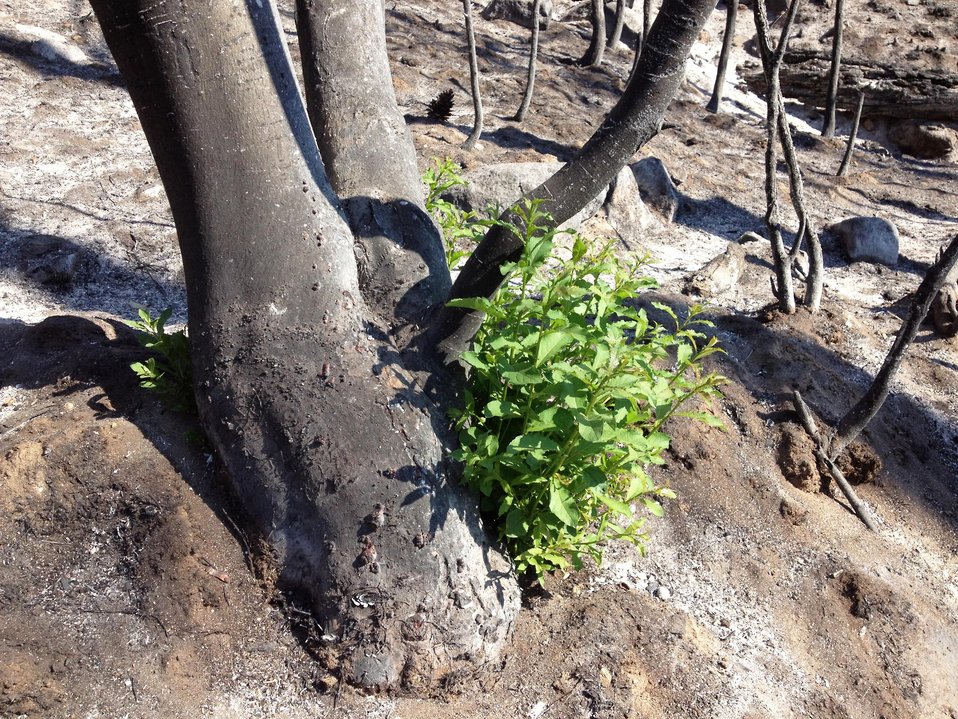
Three weeks after the Rim Fire, new vegetation starts growing. Burned Area Emergency Response (BAER) is a rapid assessment of burned watersheds by a BAER team to identify imminent post-wildfire threats to human life and safety property and critical natural or cultural resources on National Forest System lands and take immediate actions to implement emergency stabilization measures before the first major storms. Fires result in loss of vegetation exposure of soil to erosion and increased water runoff that may lead to flooding increased sediment debris flows and damage to critical natural and cultural resources. BAER team members implement seeding and mulching installation to prevent erosion, erect temporary water run-off control structures that will protect recovering areas, and installation of warning signs, replace safety related facilities, remove safety hazards, prevent permanent loss of habitat for threatened and endangered species, and prevent the spread of noxious weeds and protect critical cultural resources. The Rim Fire in the Stanislaus National Forest near in California began on Aug. 17, 2013 and is under investigation. The fire has consumed approximately 256,169 acres and is 84% contained.